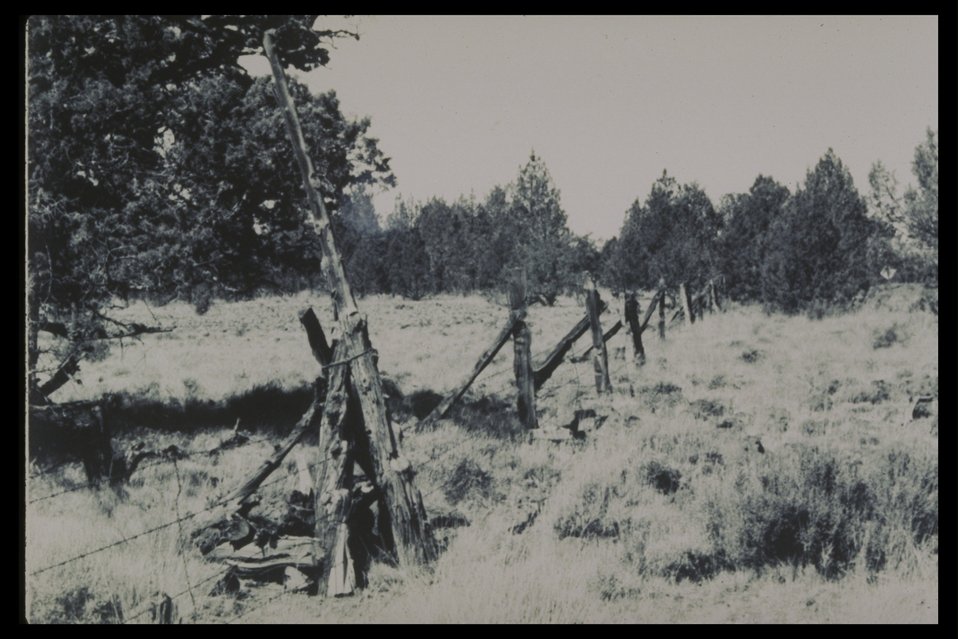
Black & White photo of range juniper/sage with juniper pole fencing.